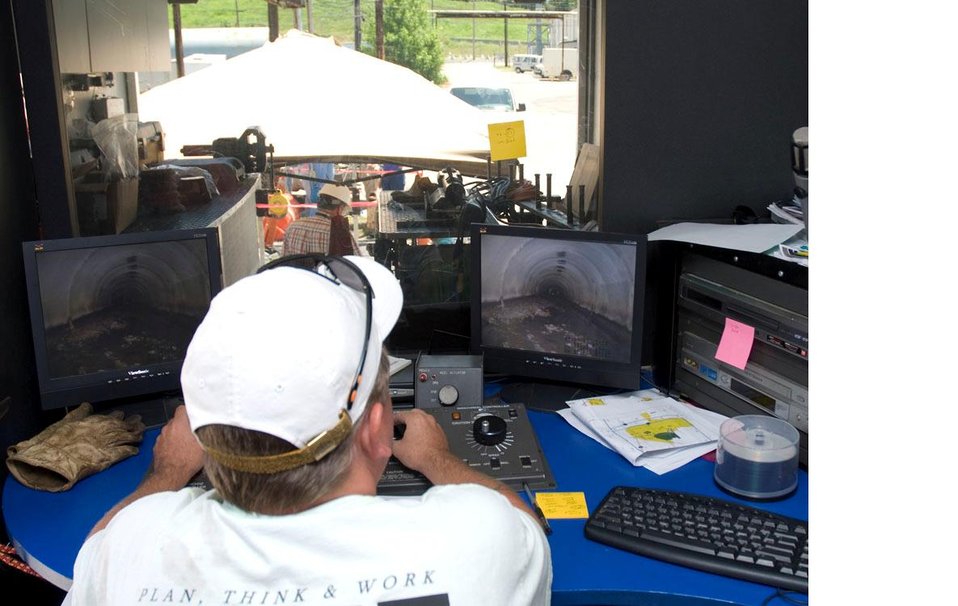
Recovery Act Funds Accelerate Regulatory Milestone Achievement in Oak Ridge

A worker views video footage of storm sewers from cameras set up by cleanup crews to evaluate current conditions before excavating soil and replacing piping.

Through the Recovery Act, Oak Ridge and DOE sites around the country now have funds to accomplish key milestones assigned by regulators, and projects that ensure a safer, cleaner environment.